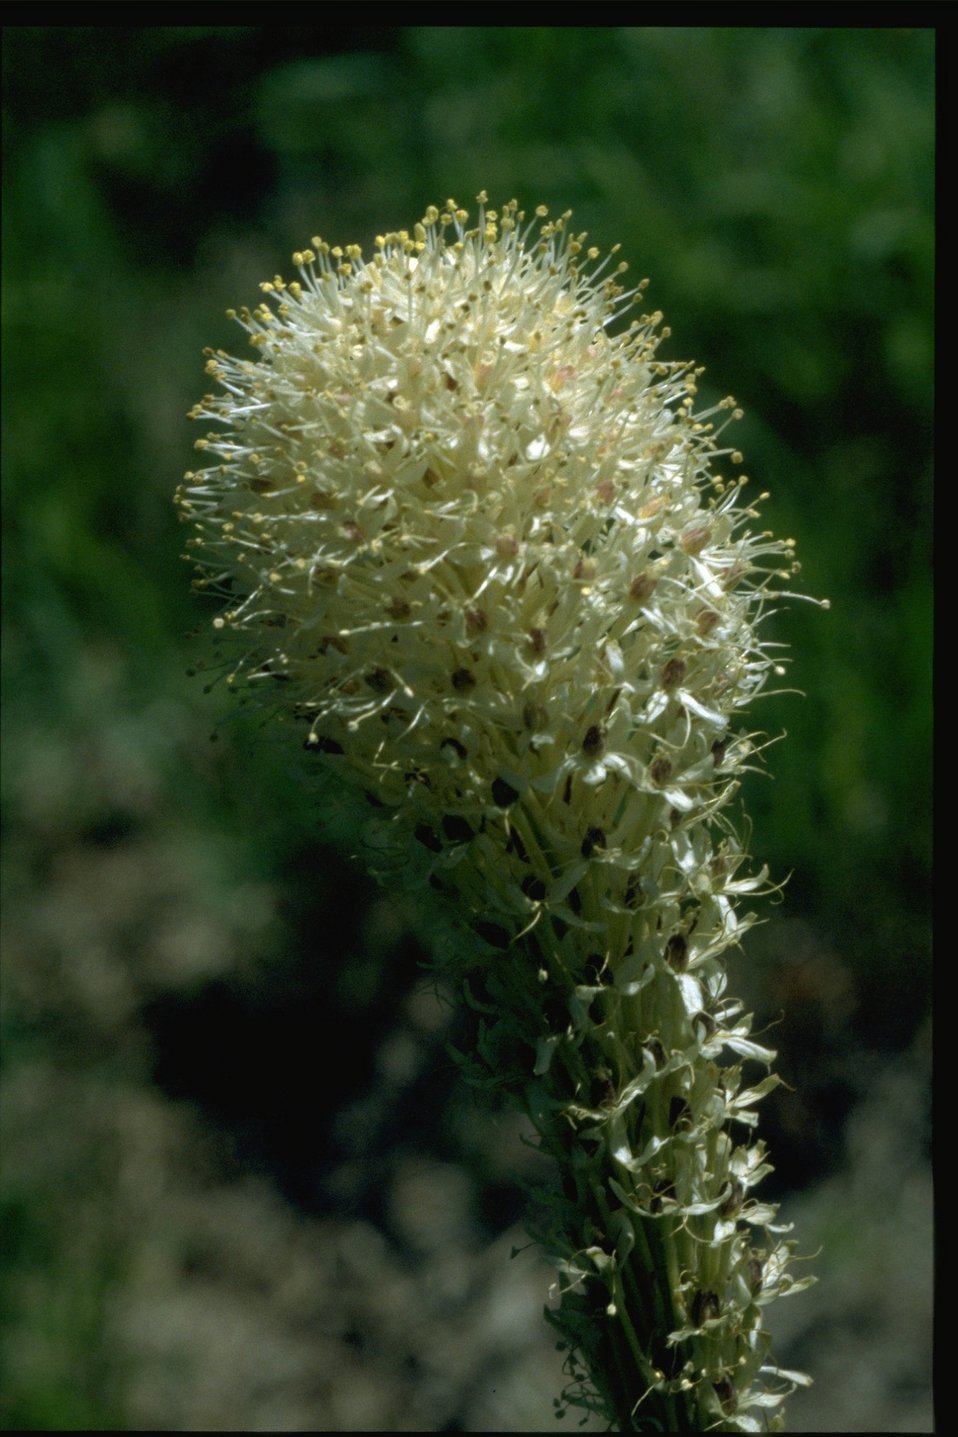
Closeup shot of Xenophyllum tenax.